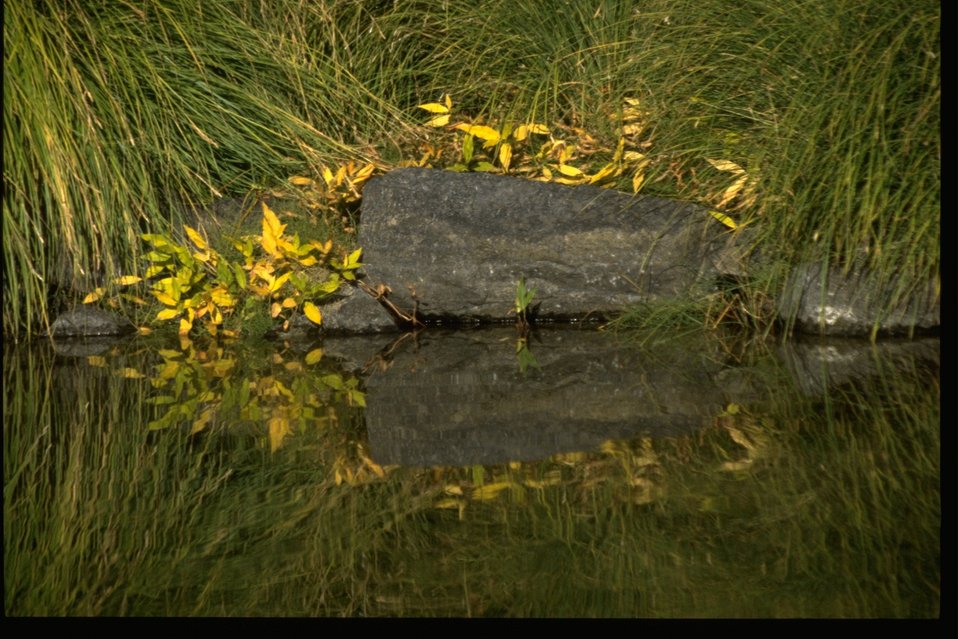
Close up shot of riparian vegetation surrounding rock on the John Day River.